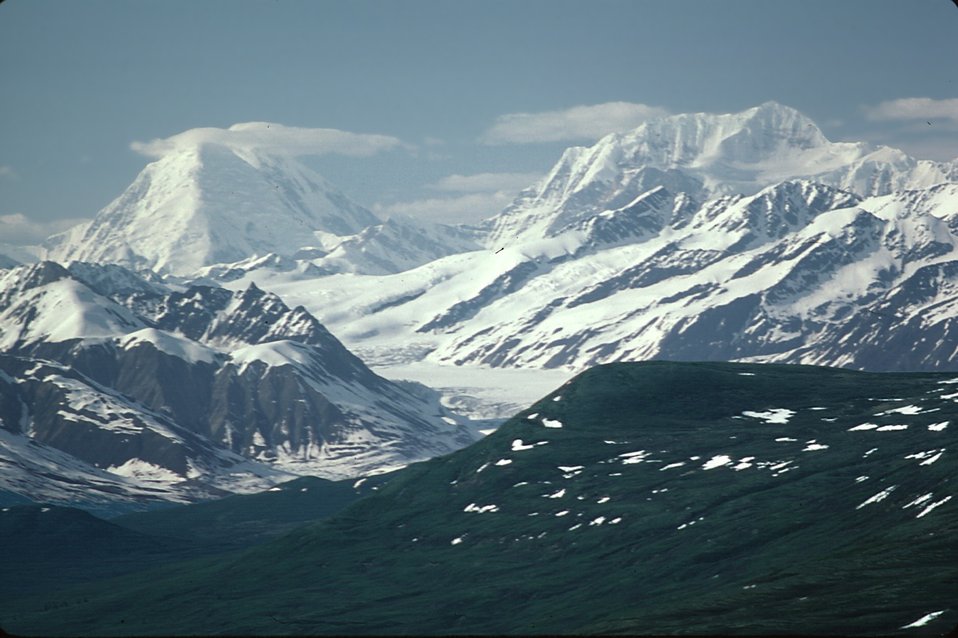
Alaska Range near Maclaren Pass, Denali Highway, Alaska